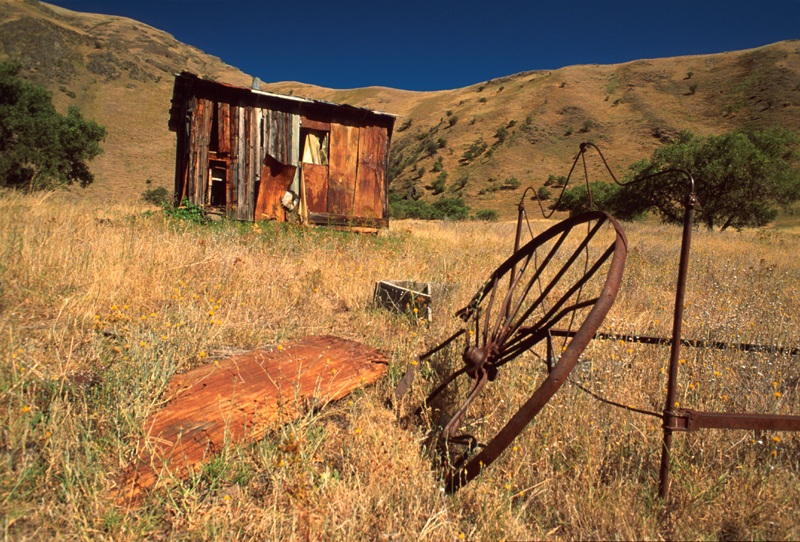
Old Shack Lower Salmon River Upper Columbia-Salmon Clearwater District